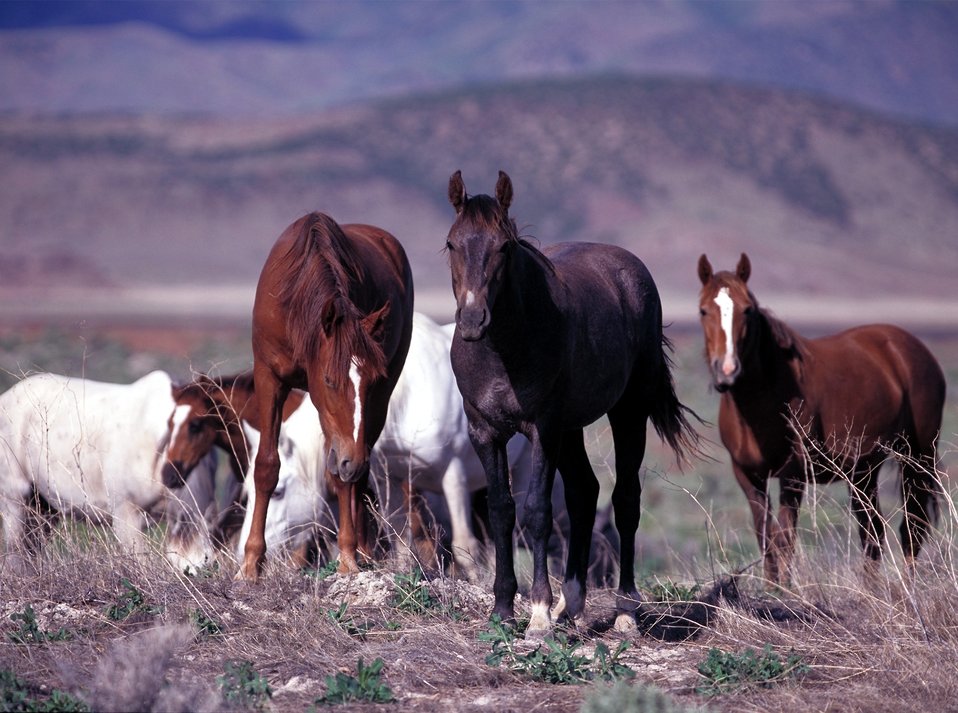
Onaqui Herd near Dugway, Utah.